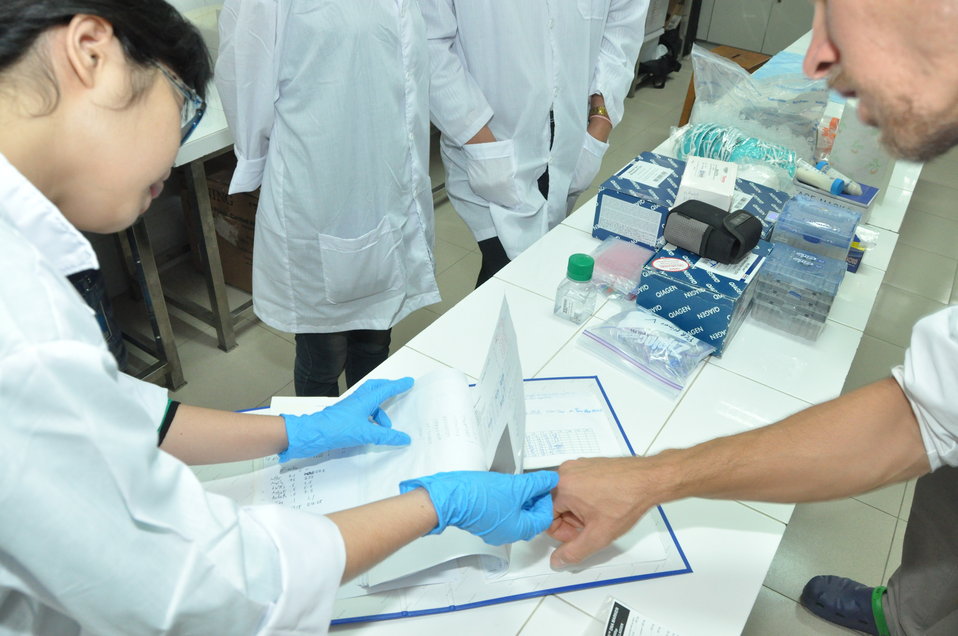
Animal virus detection lab training in Hanoi

Trainee learns how to detect viruses in Hanoi under a USAID program.